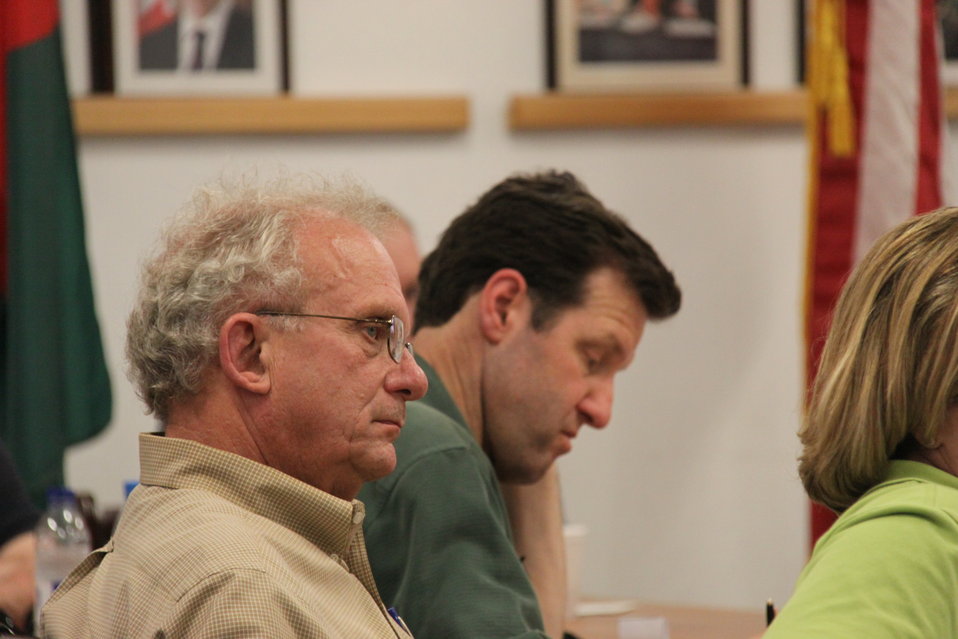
Meeting with Local Leaders in Kandahar